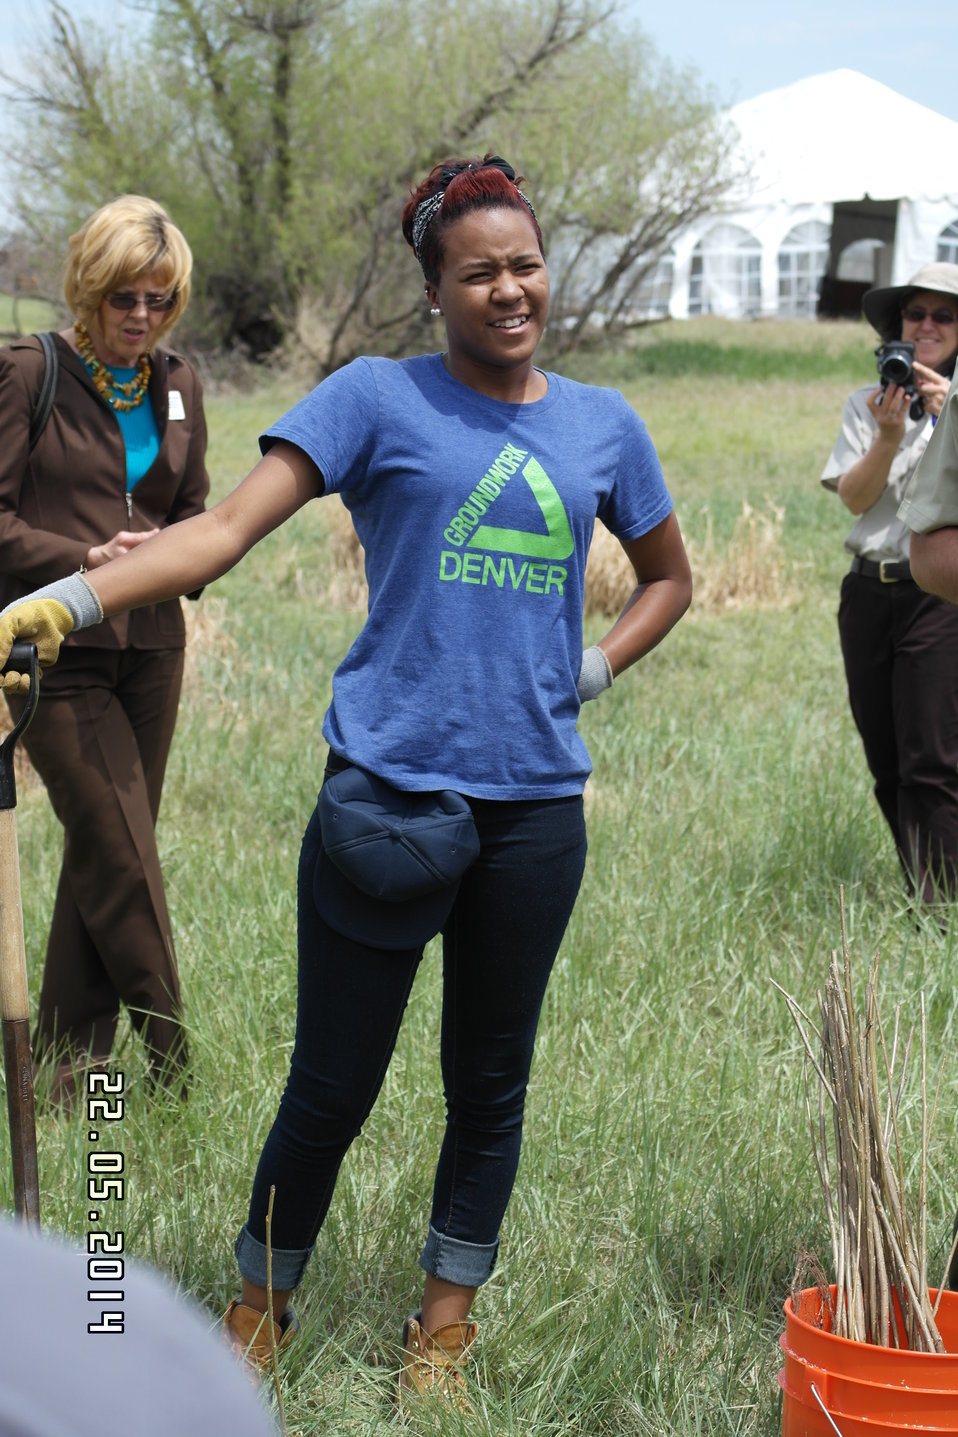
Secretary Jewell Announces $6.7 for Youth Conservation Job

Jewell made the announcement at an event at Rocky Mountain Arsenal National Wildlife Refuge outside Denver, Colorado, where she was joined by U.S. Department of Agriculture (USDA) Deputy Under Secretary for Natural Resources and the Environment Arthur “Butch” Blazer; Greg Knadle, Vice President for Government Relations of the National Fish and Wildlife Foundation (NFWF); Refuge Manager David Lucas and youth corps members of Groundwork Denver.